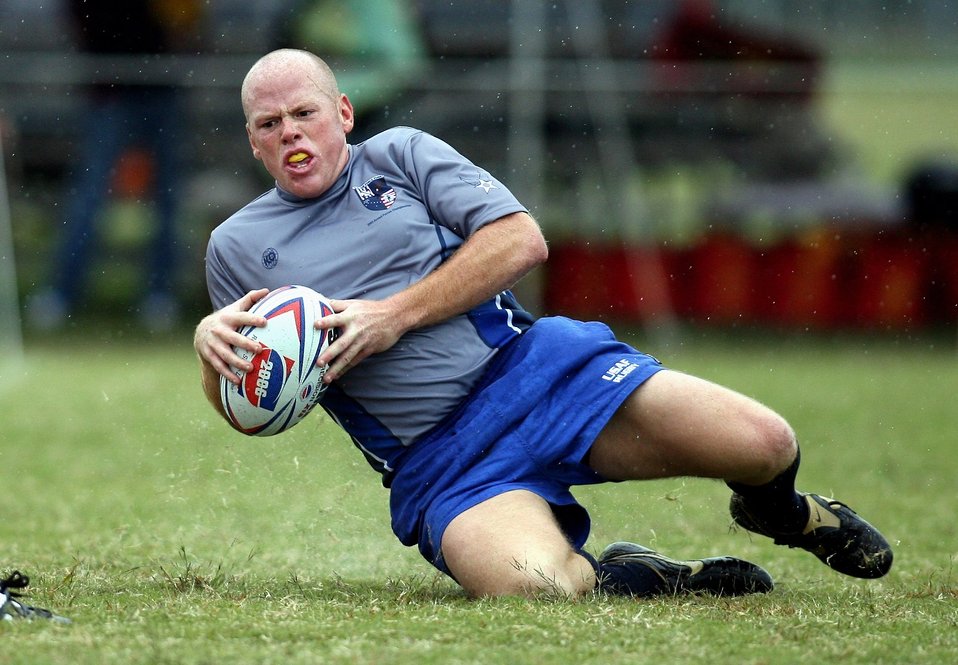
AF rugby team wins third straight Armed Forces title

Senior Airman James Hubby scores against the Marine Corps during the final Armed Forces Rugby Championship match Oct. 27 at Camp Lejeune, N.C. Air Force beat the Marines 38-3 to win their third straight Armed Forces championship.